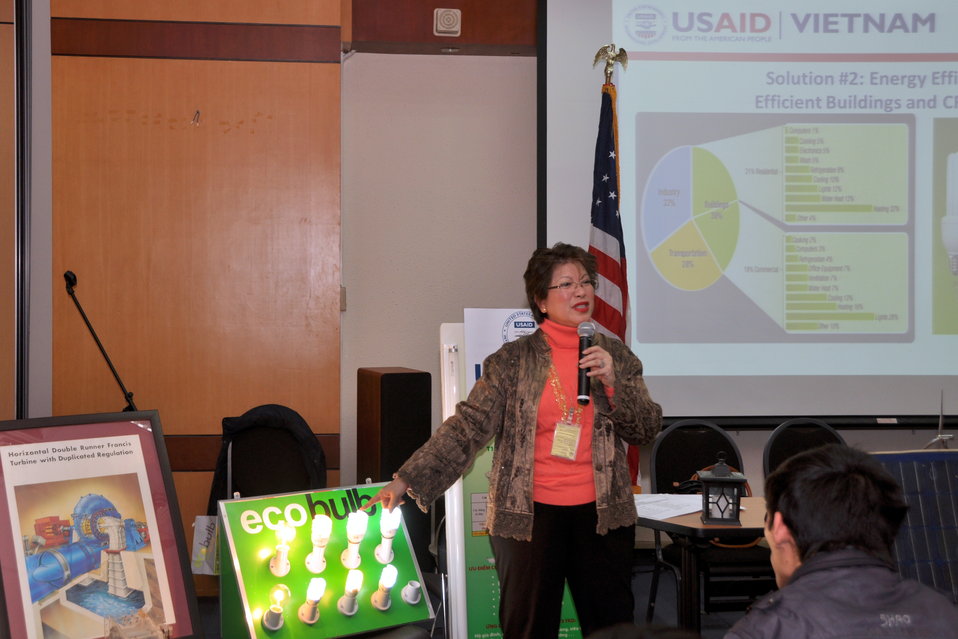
Speaker program on Climate Change and Clean Energy at the American Center

Hanoi, January 16, 2013